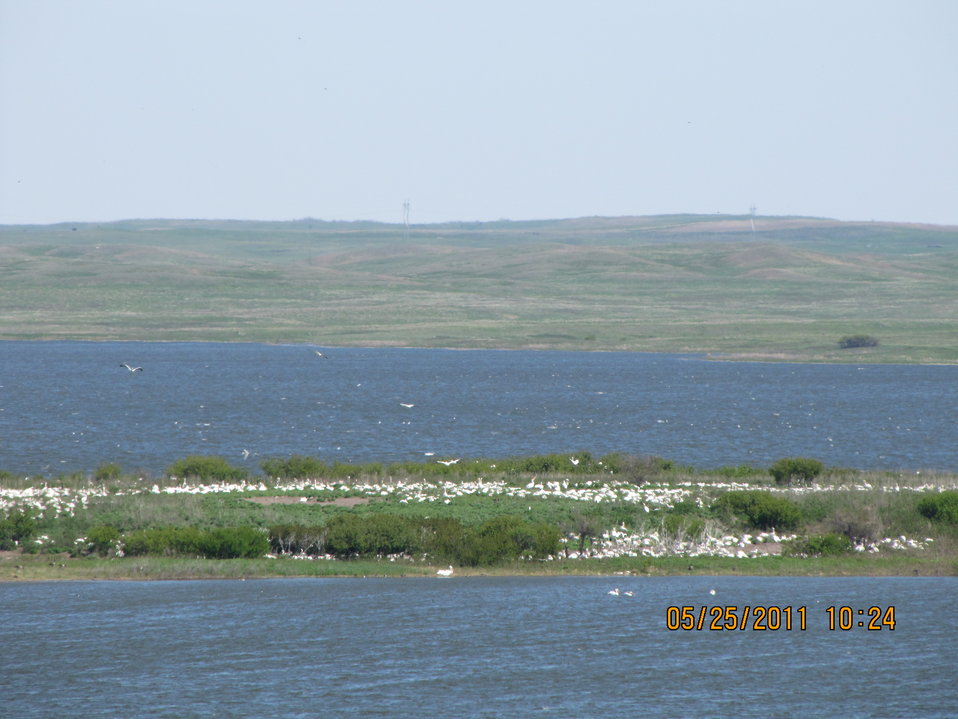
View of birds on nesting island in Chase Lake NWR

Two of the three nesting islands found in Chase Lake National Wildlife Refuge (NWR). View from the south. The larger south island contains thousands of American White Pelicans, Great Egrets, Snowy Egrets, Cattle Egrets, Black-Crowned Night-Herons, Little-Blue Herons, and White-Faced Ibis.